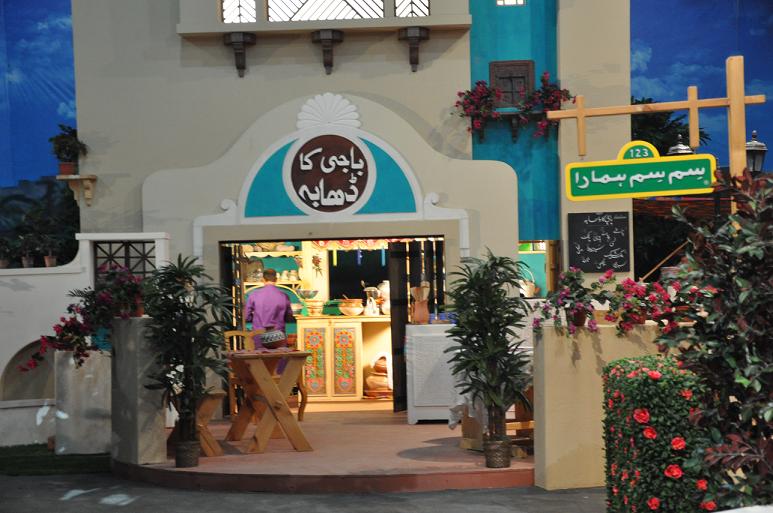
Sim Sim Hamara set.